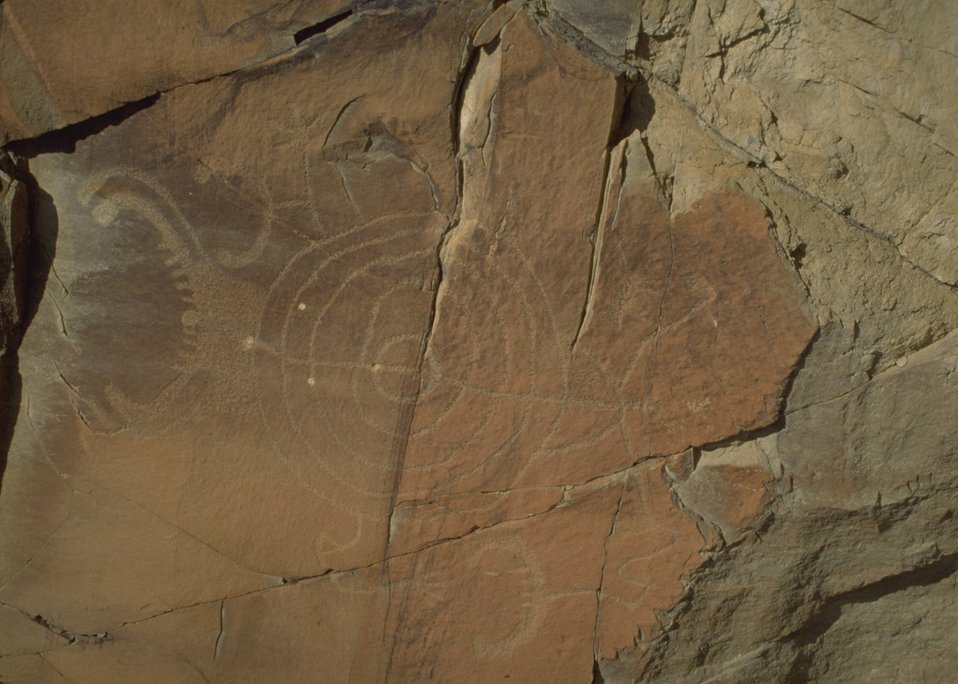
Petroglyph panel in Whoopup Canyon, Newcastle Field Office.